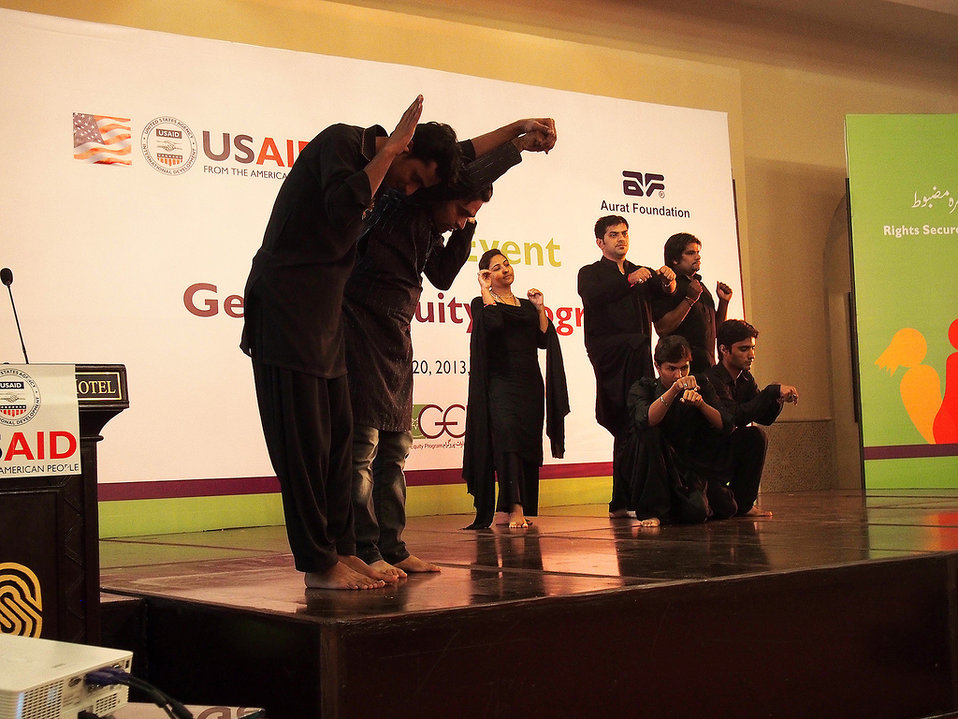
Gender Equity Program, Pakistan

USAID and Aurat Foundation annual event in Islamabad, Sept. 20, 2013